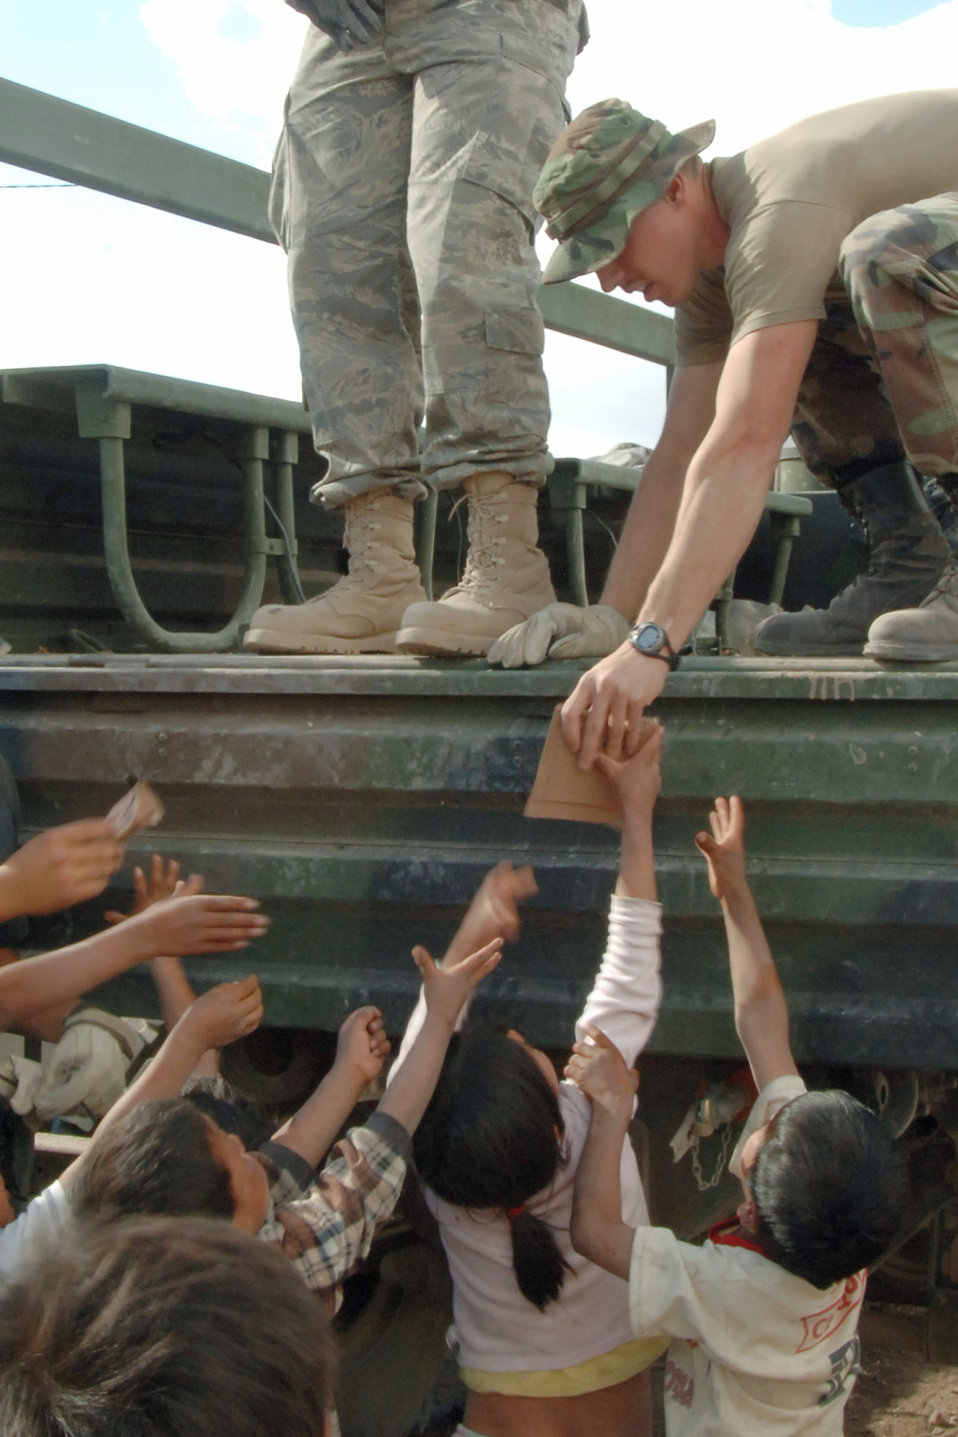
New Horizon Peru

Staff Sgt. Brandt Higley and other Airmen greet a group of Peruvian children June 3 before beginning construction of a clinic in Yanama, Peru, in support of New Horizons Peru 2008, a humanitarian event that benefits thousands of Peruvians. Nearly 300 members from the U.S. Air Force, Army, Marines and Navy came together to provide Peruvians with new schools, clinics and water wells. The Airmen are assigned to Task Force New Horizon-Peru 2008.